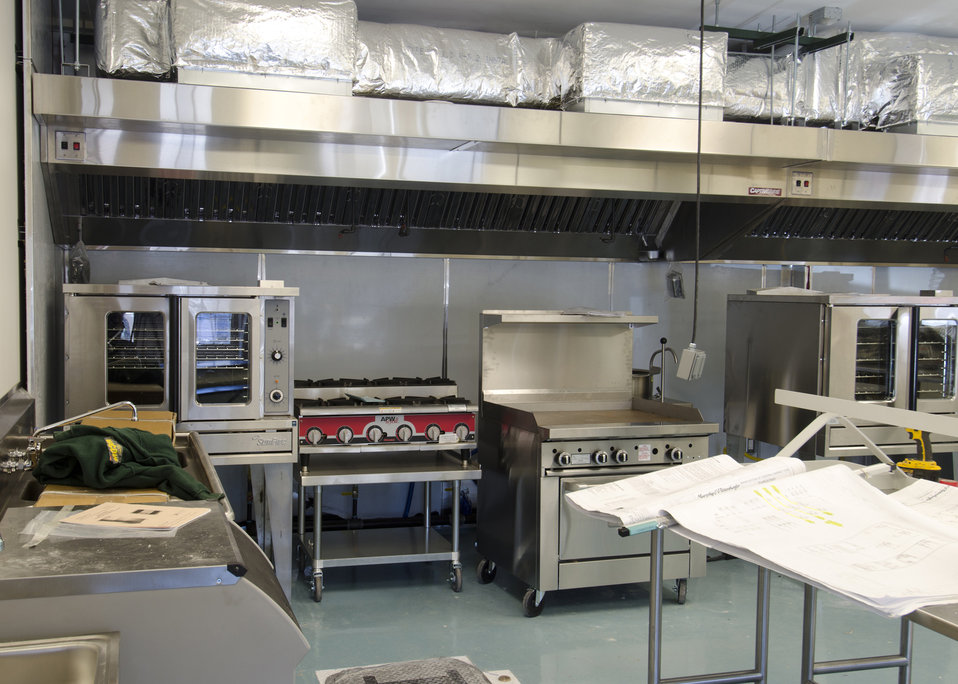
YorKitchen is a shared incubator kitchen that received partial funding through the U. S. Department of Agriculture’s (USDA) Rural Development (RD) Rural Business Enterprise Grant (RBEG) program. This program provides grants for rural projects that finance and facilitate development of small and emerging rural businesses, distance- learning networks, and employment related adult education programs. YorKitchen is a commercially equipped and fully licensed kitchen in which new entrepreneurs can prepare new products without the associated start up costs. This “incubator kitchen” provides full business support to include invoicing, accounting, advertising, outreach, and marketing for entrepreneurs. The YorKitchen is housed in the annex of Central Market in York, PA. This location offers local agricultural producers increased opportunities to develop new value-added products with their produce.